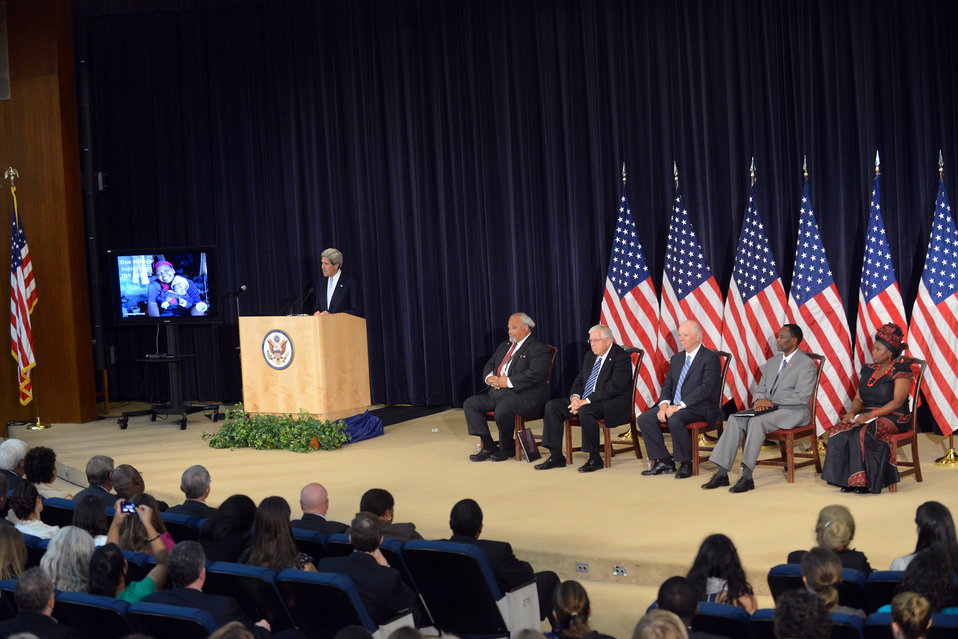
Secretary Kerry Hosts the PEPFAR 10th Anniversary Celebration

U.S. Secretary of State John Kerry hosts the President’s Emergency Plan for AIDS Relief (PEPFAR) 10th Anniversary Celebration at the U.S. Department of State in Washington, D.C., on June 18, 2013.